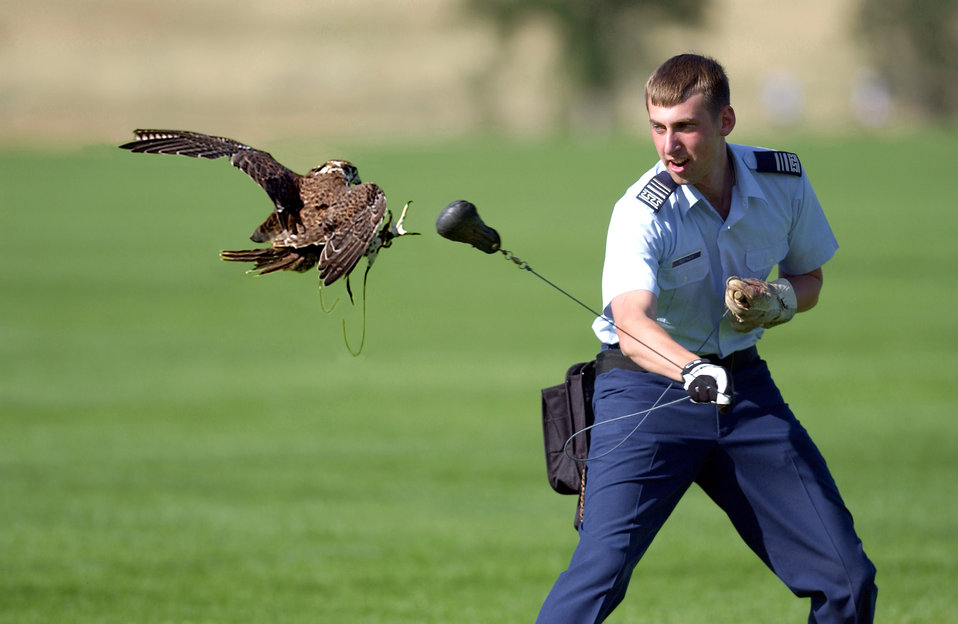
Power dive

U.S. AIR FORCE ACADEMY, Colo. -- Cadet 1st Class Mike Heddinger lets Liberty catch a food-laden lure during training here. The academy mascots dive for their dinner at speeds exceeding 200 mph. Four of the other mascots tested positive for West Nile Virus recently, and one likely died of the virus. The academy has 10 falcon mascots.